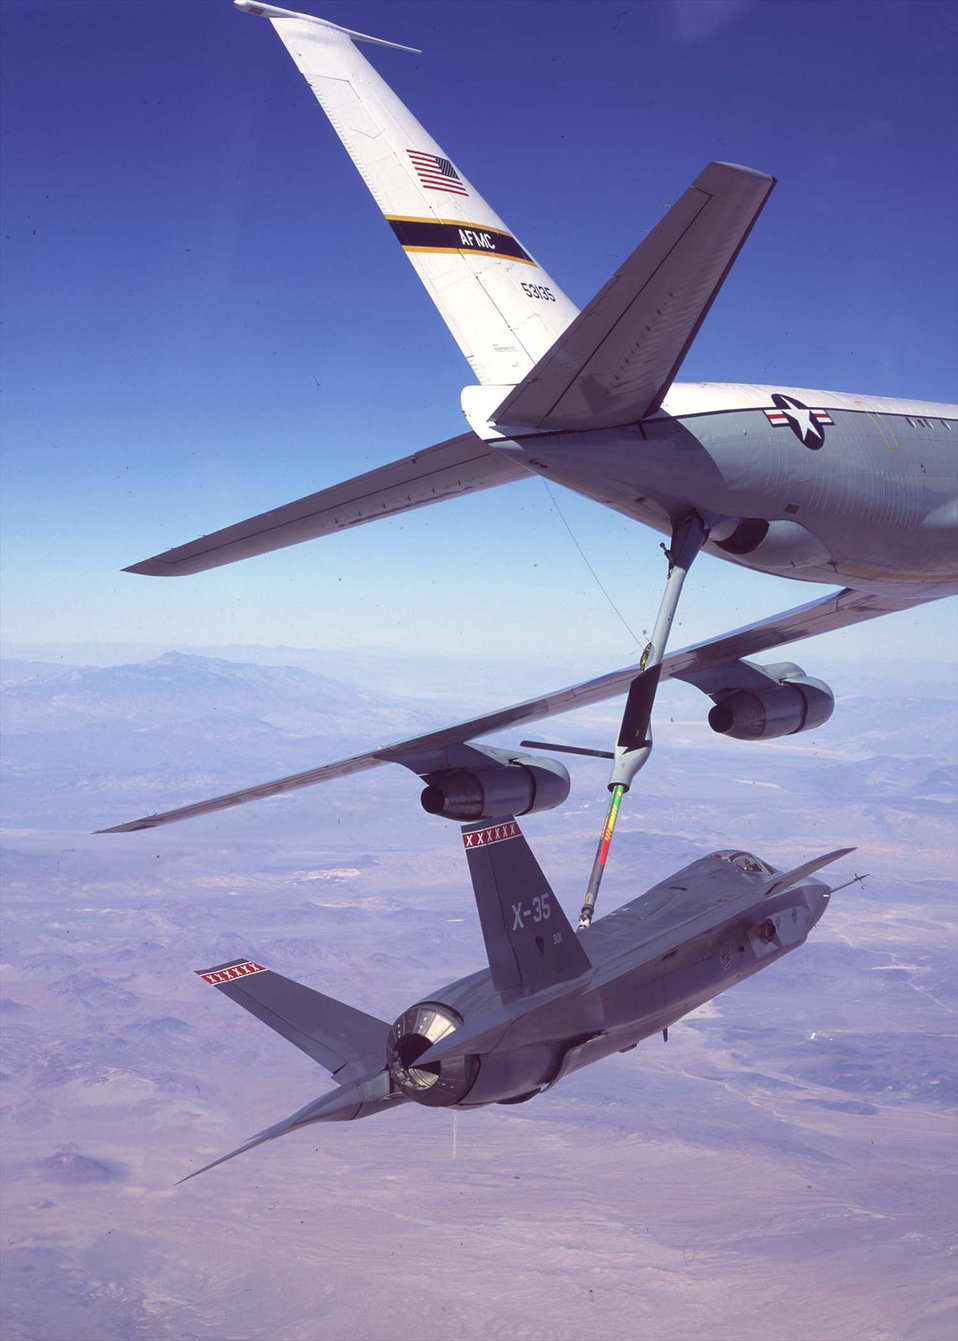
Thirtsy X-35

EDWARDS AIR FORCE BASE, Calif. -- Lt. Col. Paul Smith holds the X-35A Joint Strike Fighter steady in behind a 418th Flight Test Squadron KC-135 tanker during the X-35A's first refueling mission.